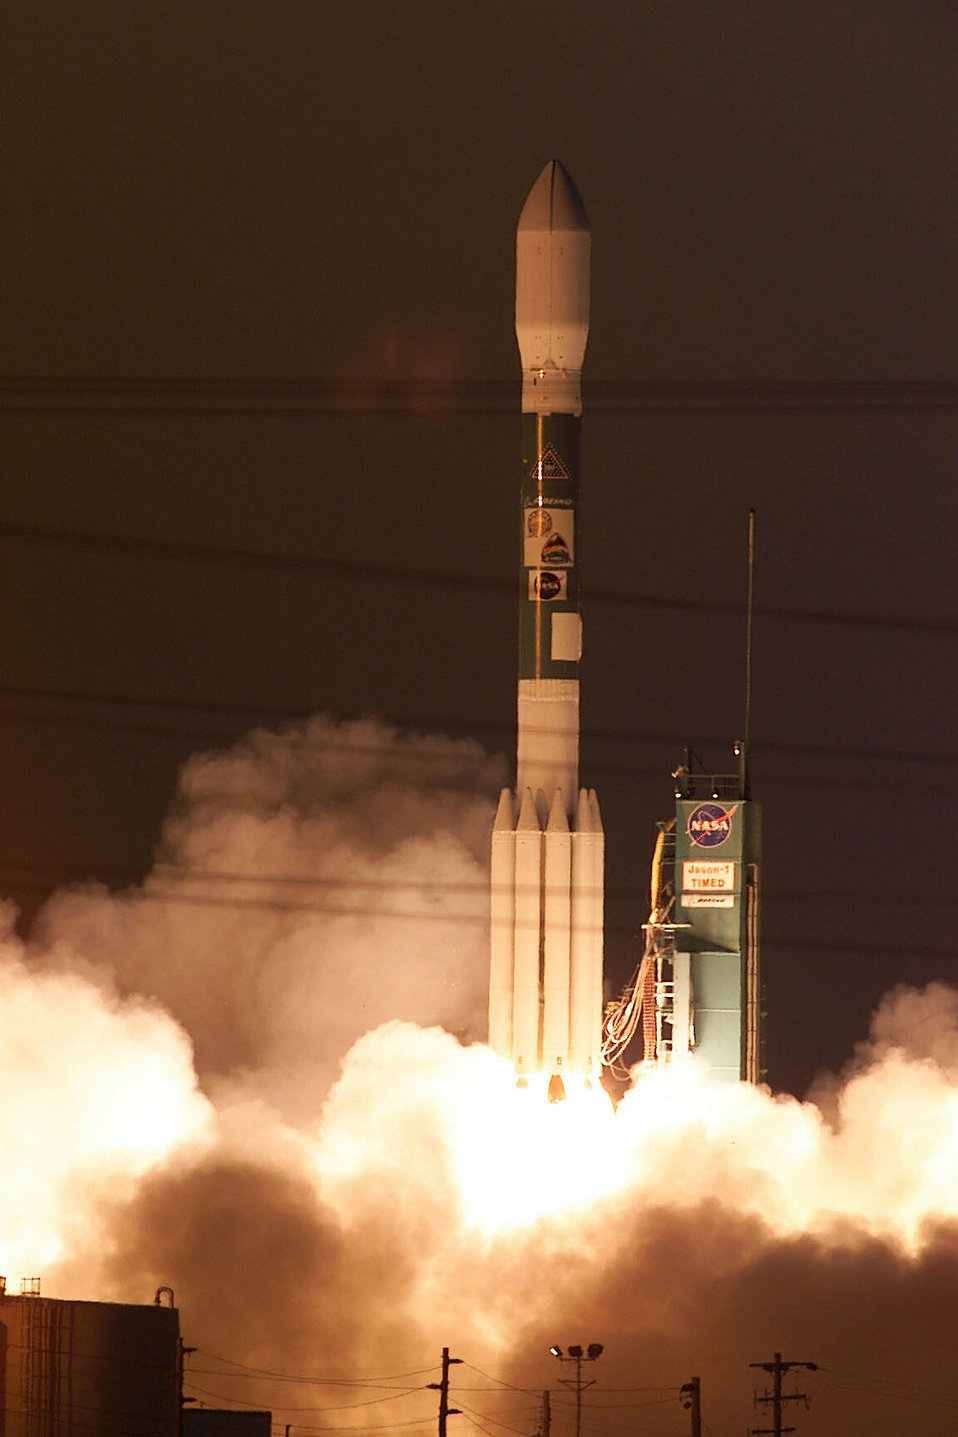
Delta II

VANDENBERG AIR FORCE BASE, Calif. -- Team Vandenberg successfully launched a Boeing Delta II rocket carrying the Jason 1 and Timed satellites from Space Launch Complex-2 on Dec. 7. This was the second Delta II launched from Vandenberg this year. Jason 1 is a joint U.S./French oceanography mission. Jason 1 will monitor world ocean circulation, study interactions of the oceans and atmosphere, improve climate predictions and observe events such as El Nino. The NASA timed spacecraft will conduct the first global study of the Earth’s mesosphere, lower thermosphere and ionosphere. The project is managed by the Jet Propulsion Laboratory in Pasadena, Calif., for NASA and the French space agency.